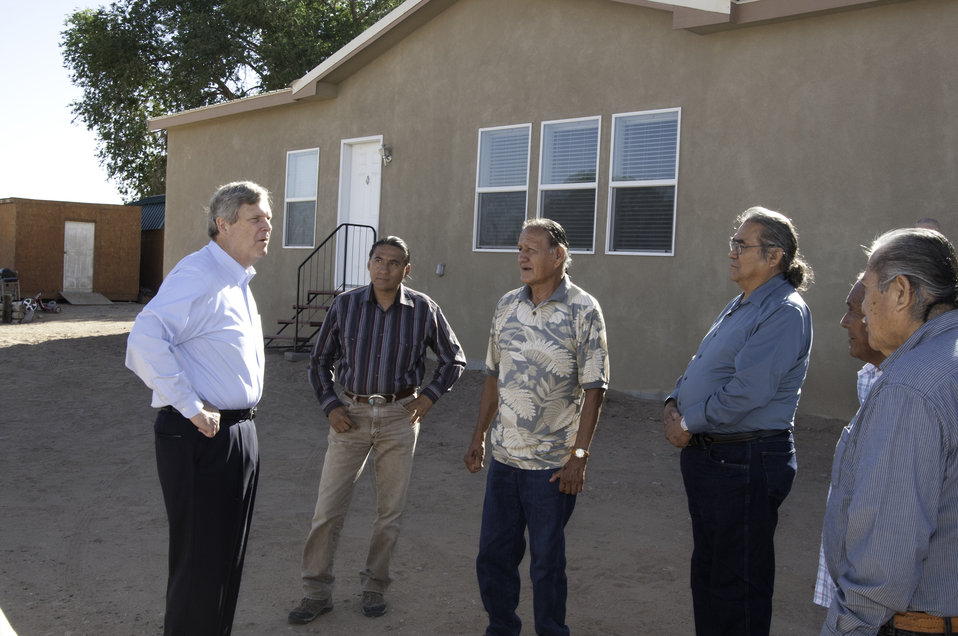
Agriculture Secretary Tom Vilsack meets with New Mexico producers and community stakeholders to highlight the U.S. Department of Agriculture’s (USDA) StrikeForce Initiative opportunities and the importance of comprehensive immigration reform in Albuquerque, NM on Thursday, Jun. 20, 2013.